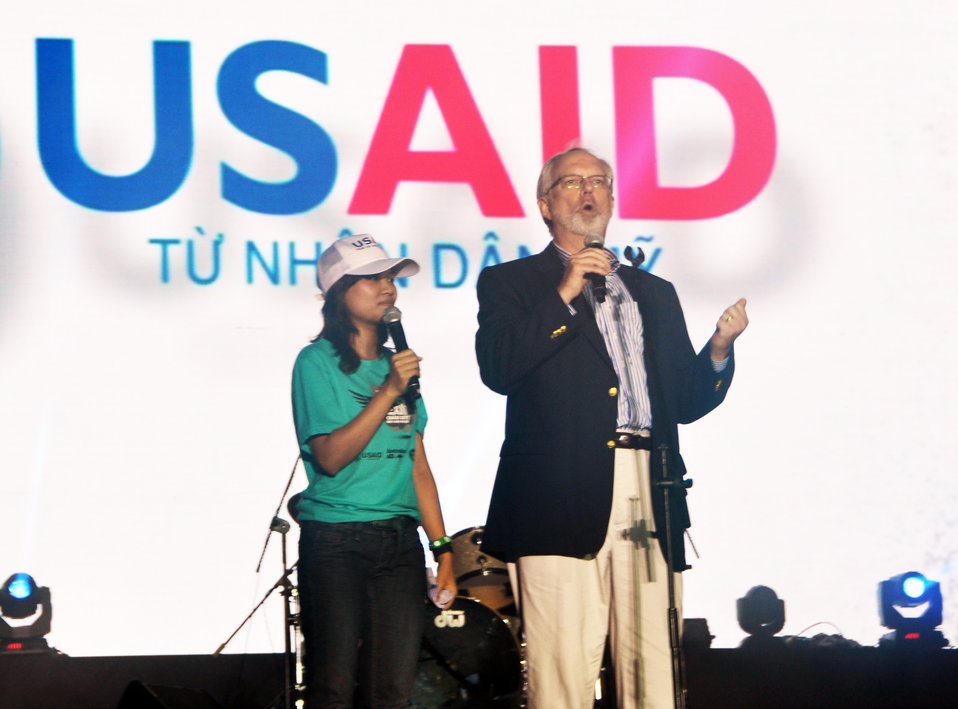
U.S. Ambassador David Shear belts out the message: Stop - human trafficking - NOW.

USAID supports MTV EXIT concert against human trafficking and exploitation